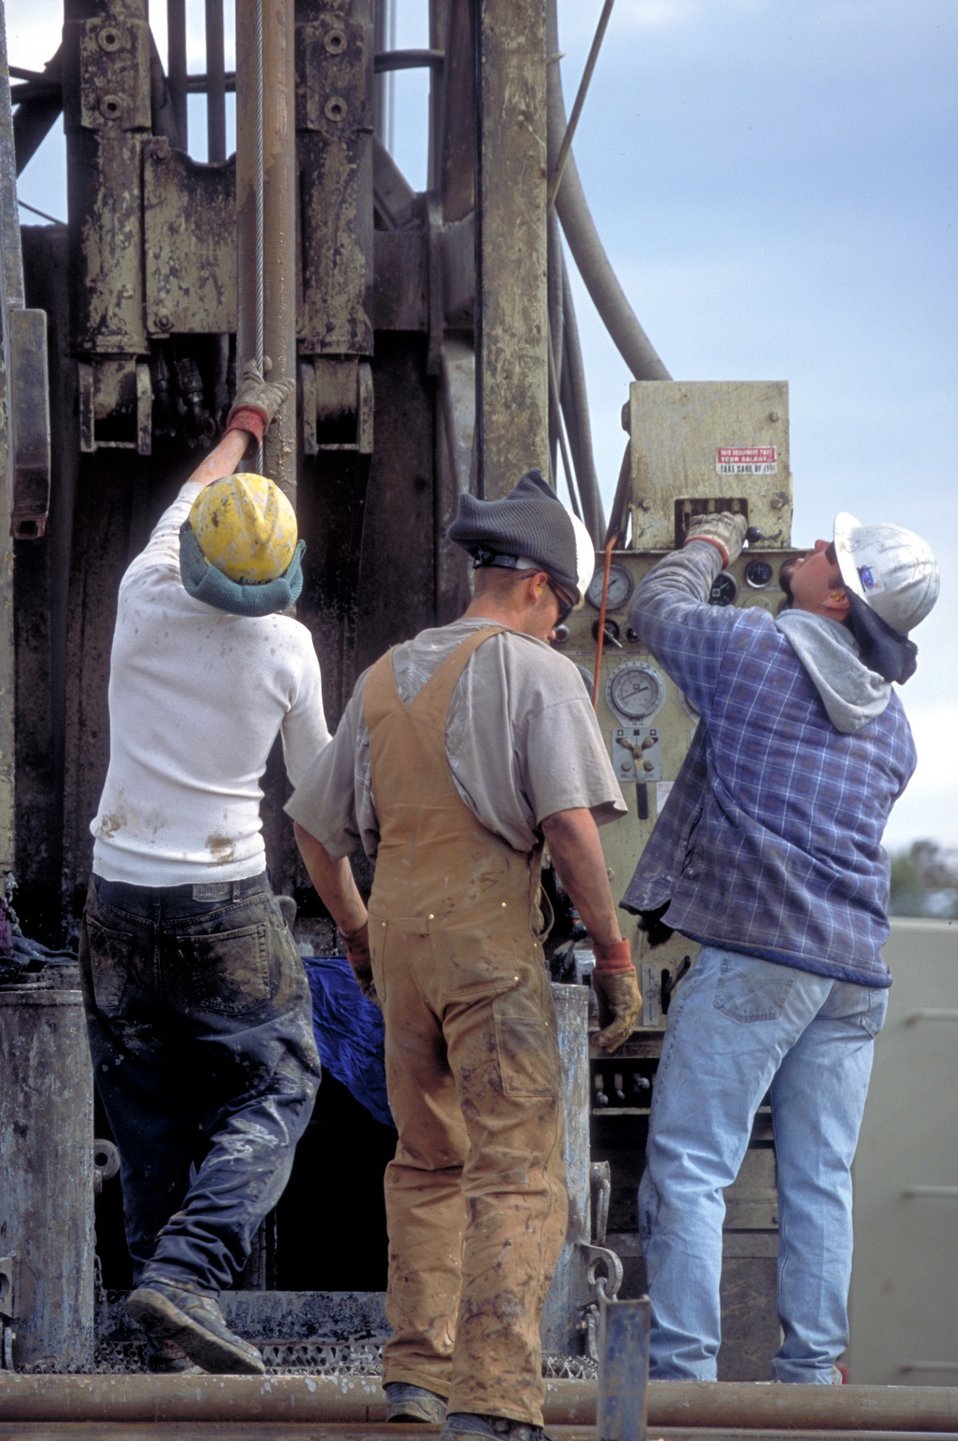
Drilling for coal bed methane near Price, Utah.